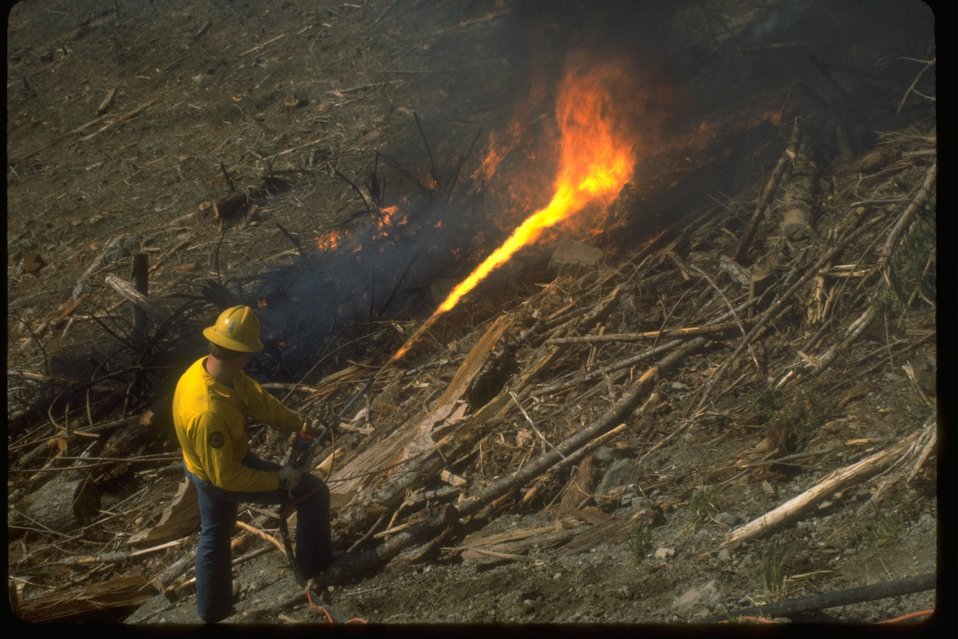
The ignition of a prescribed fire.